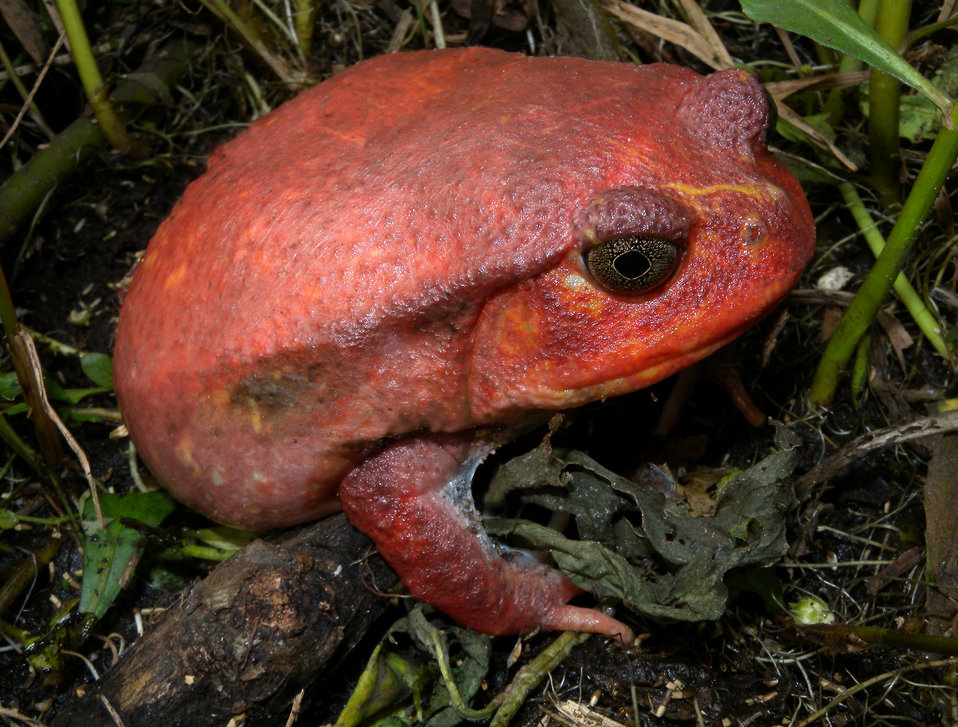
#15 - Guess the Species!

Countdown to CoP16: Can you name this CITES-listed animal? Found in Madagascar, this amphibian has an incredible defense mechanism. When a predator tries to eat the frog, the frog’s skin secretes a thick fluid that sticks to the mouth and eyes of the predator, causing the animal to release the frog. This species is listed in CITES Appendix I due to an unsustainable pet trade.

Tomato Frog. Taken by Frank Vassen (CC BY 2.0), Toamasina, Madagascar, 2008.